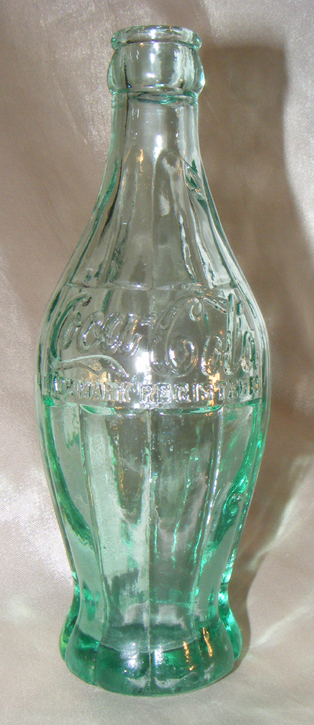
A picture of an original 1915 contour Coca-Cola prototype bottle designed by Earl R. Dean. There are only two of these original prototypes in existence. The one pictured here belongs to the Dean family. The other one is on display at the World of Coca-Cola in Atlanta.